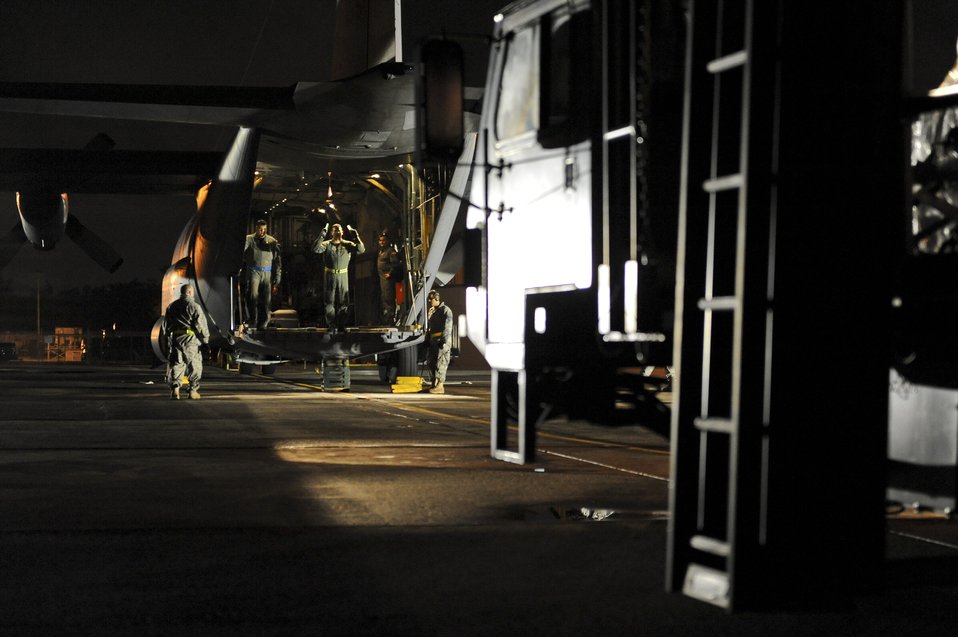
Haiti night mission

Airmen from the Puerto Rico Air National Guard's 156th Airlift Wing load cargo onto a C-130E Hercules aircraft Jan. 16, 2010, to support the relief effort in Haiti in the aftermath of a devastating earthquake.